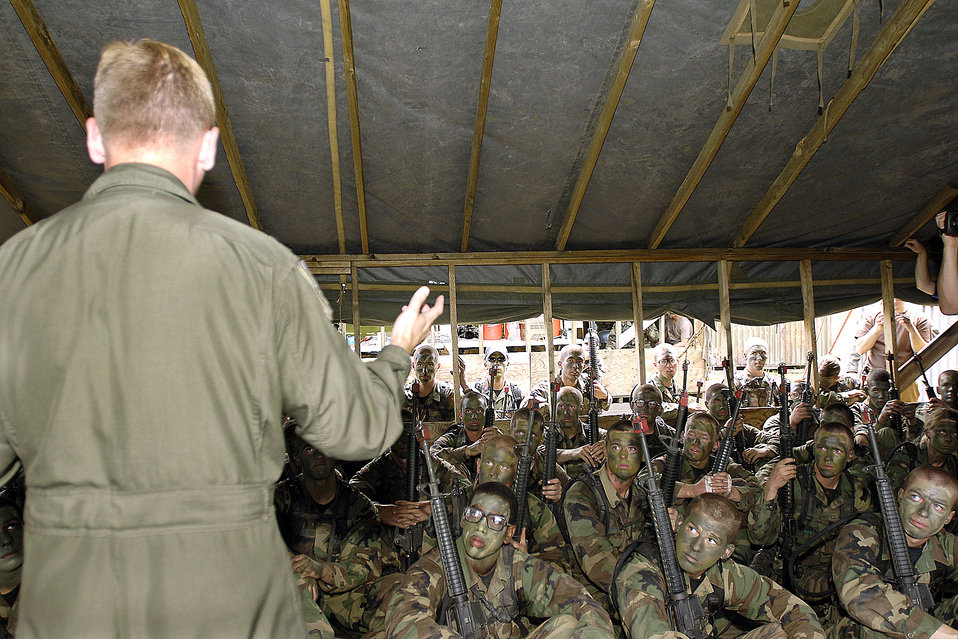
ROVER adds extra set of eyes to sky

Lt. Col. Gregory Harbin briefs basic cadets during a visit to the U.S. Air Force Academy, Colorado Springs, Colo., on July 28. He demonstrated the Remote Operated Video Enhanced Receiver, which receives video captured by an unmanned aerial vehicle. Colonel Harbin is with the 609th Combat Operations Squadron at Shaw Air Force Base, S.C.